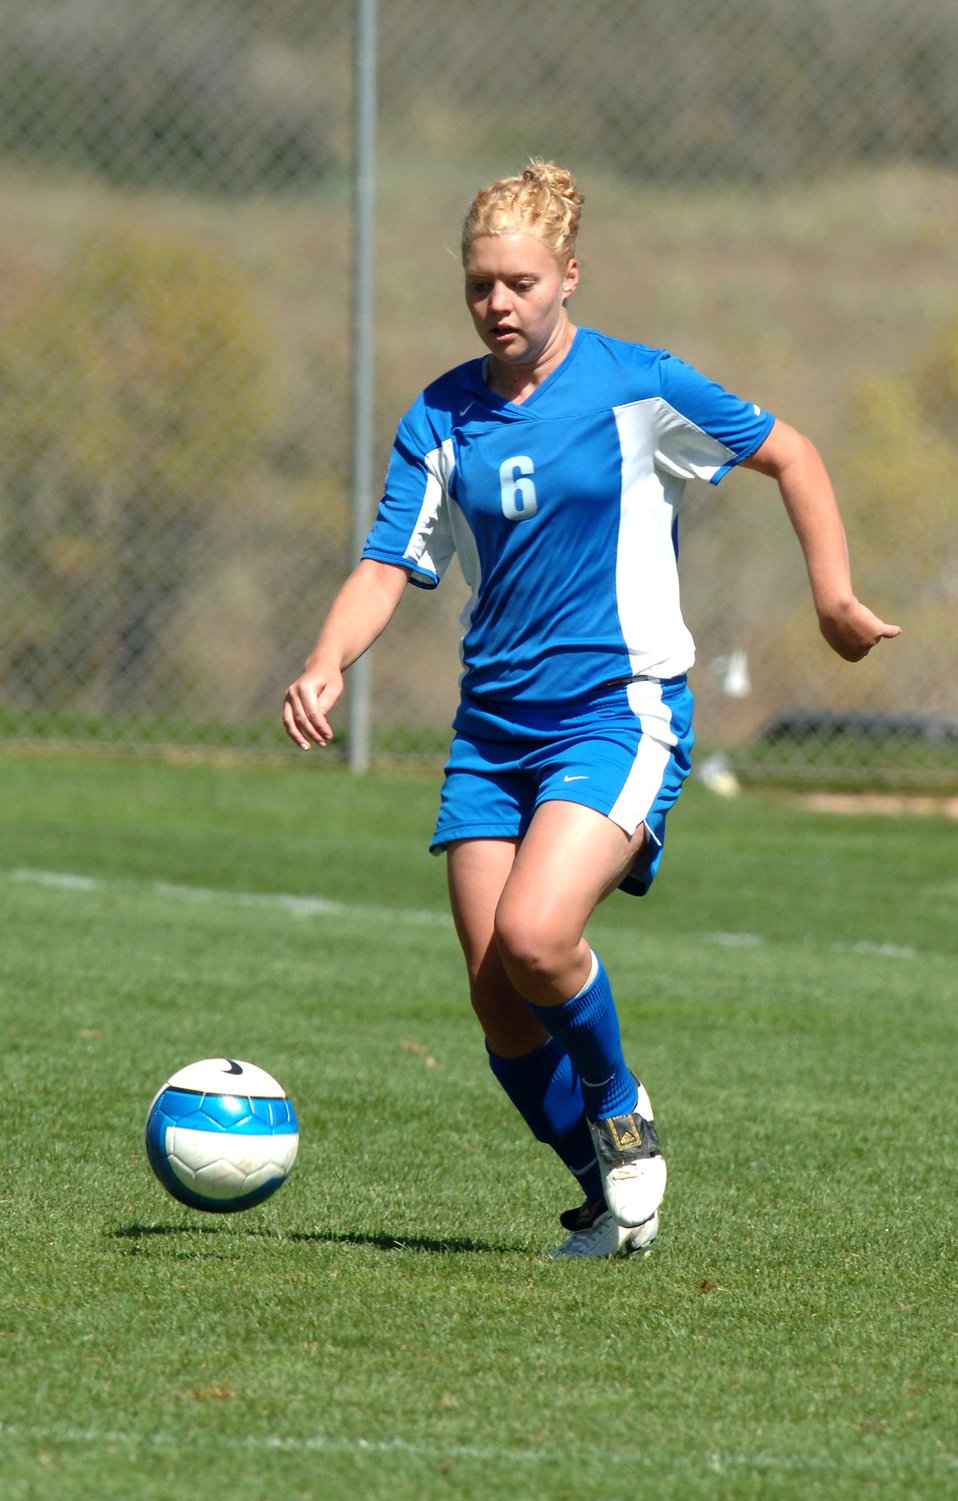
Cadet named to all-conference women's soccer team

Rachael Emory, a midfielder/defender for the U.S. Air Force Academy woman's soccer team, was named to the 2006 All-Mountain West Conference Women's Soccer Team in Salt Lake City. The sophomore, originally from Wagoner, Okla., was selected for the second team.